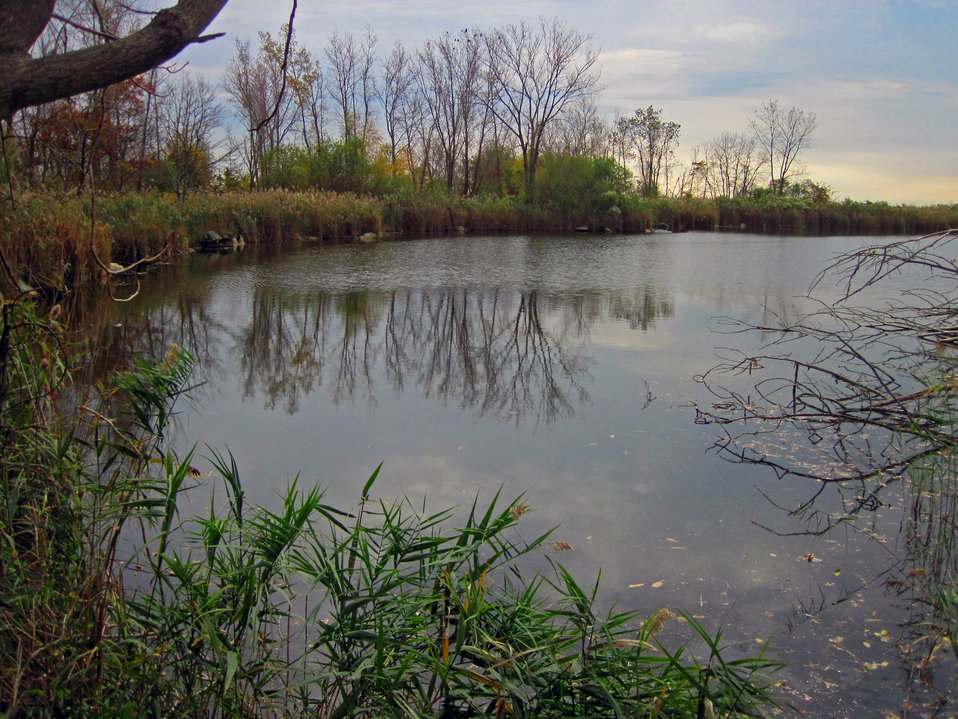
Great Meadows Pond

Stewart B. McKinney National Wildlife Refuge, CT.